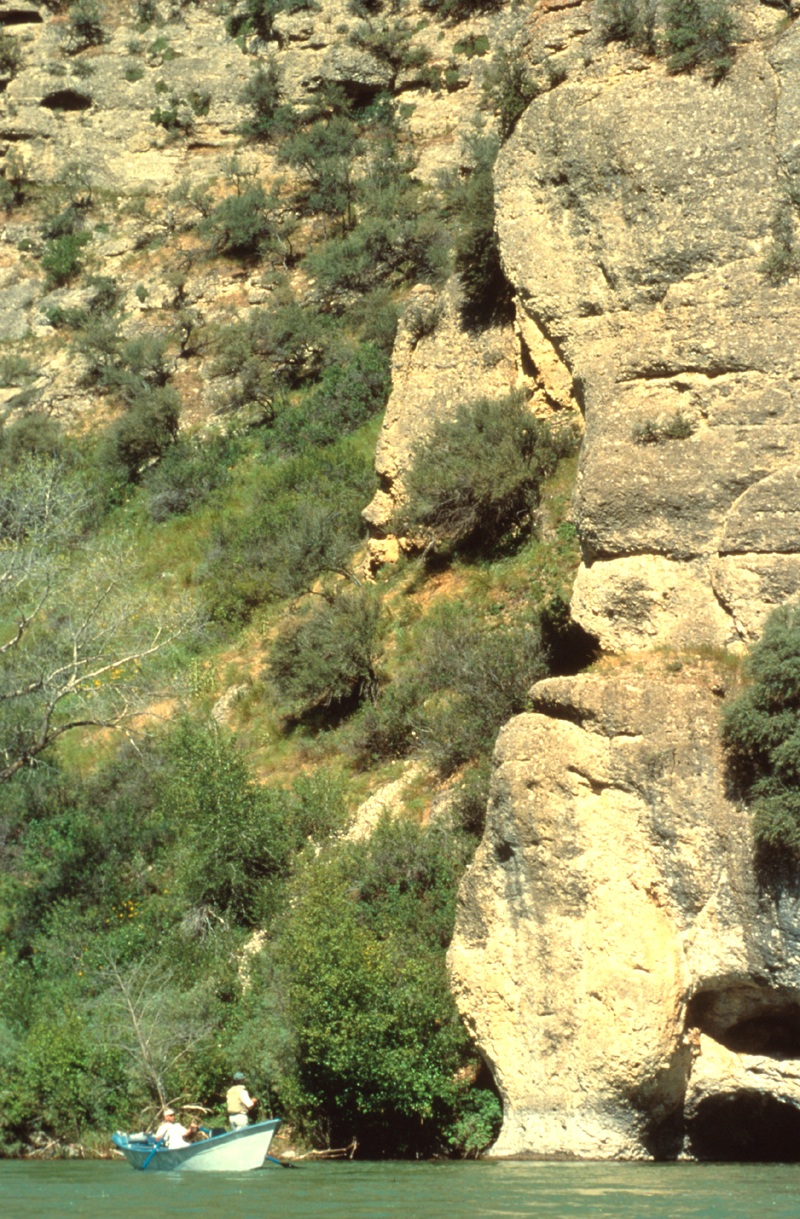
South Fork of the Snake River